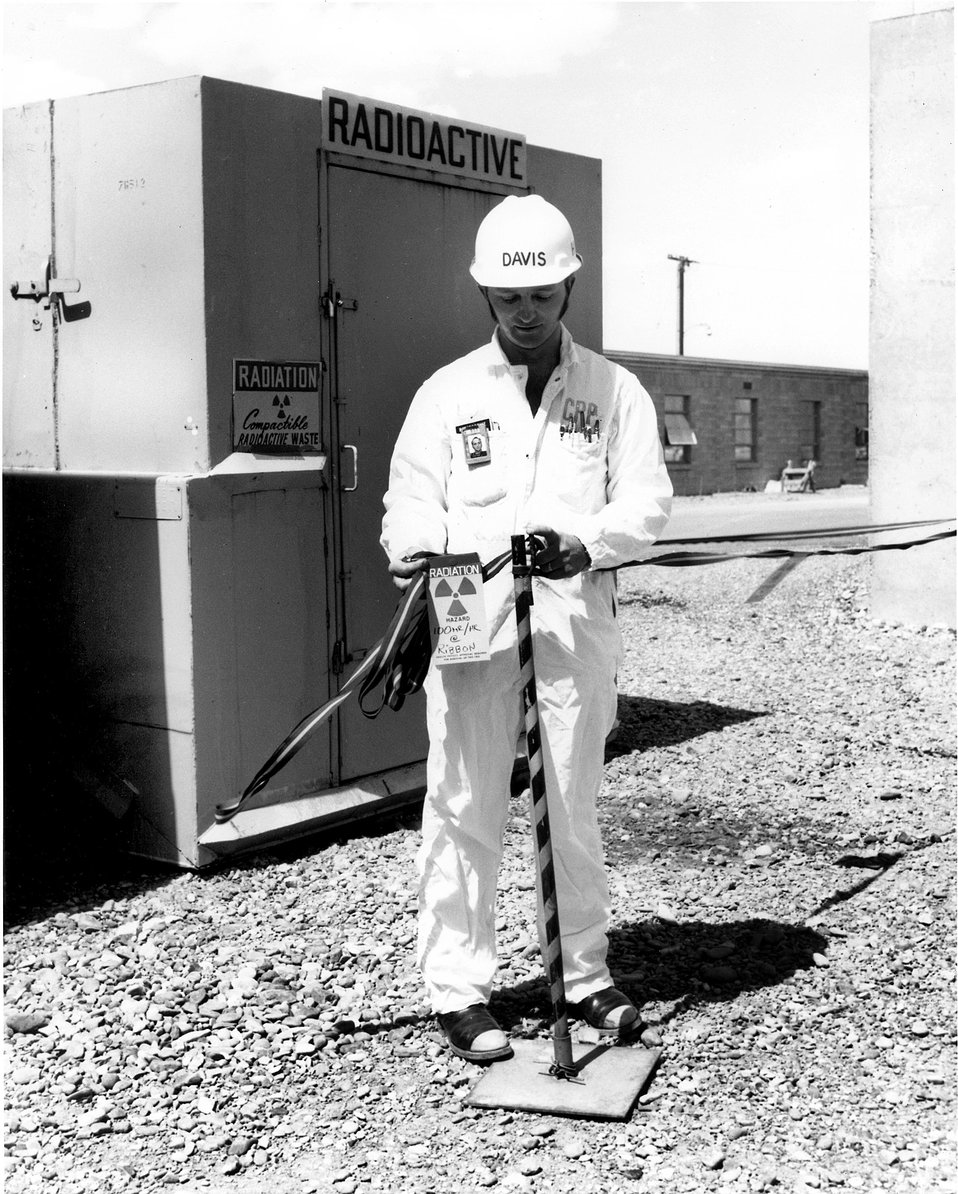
A health physicist labels and ribbons off an outdoor area where a potential of contamination or radiation exposure exists.